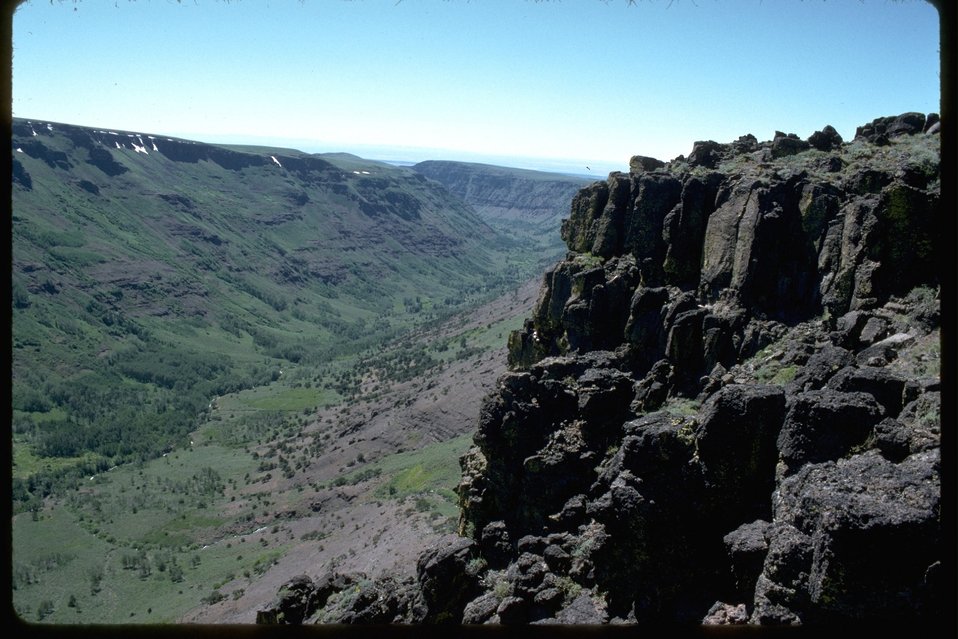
Little Blitzen Gorge, looking east from the south rim near Rooster Comb area.